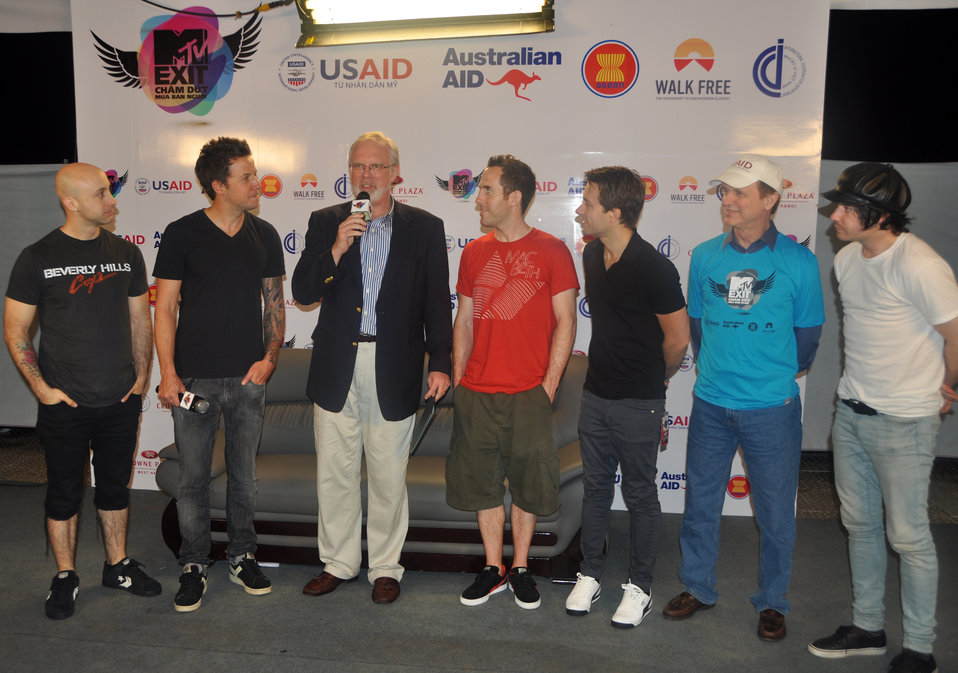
U.S. Ambassador David Shear presents Simple Plan with a certificate of appreciation for taking parting in the MTV EXIT concert against human trafficking and exploitation

USAID supports MTV EXIT concert against human trafficking and exploitation.

Also appearing with the band is USAID Mission Director, Francis Donovan.